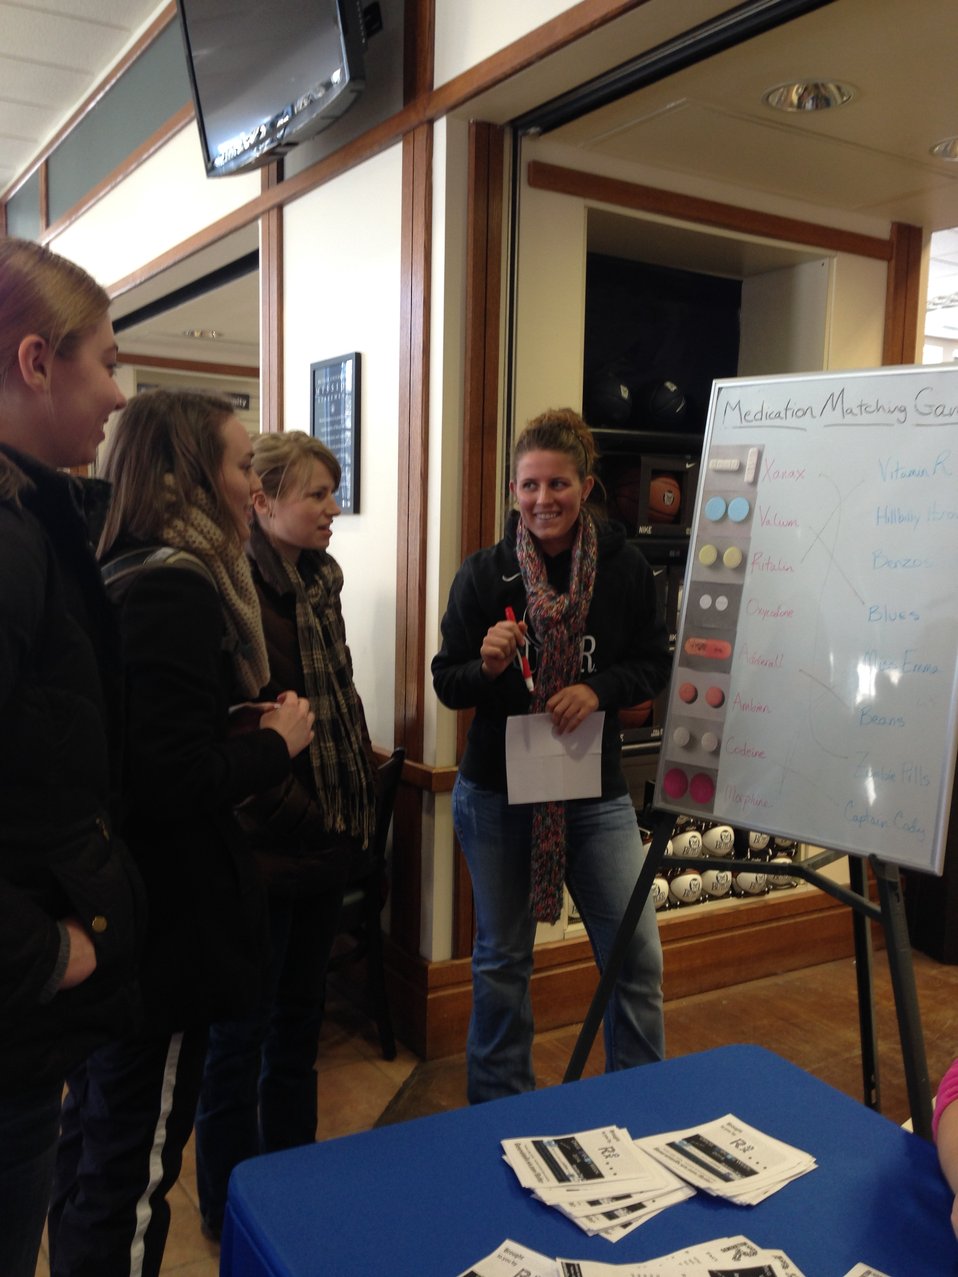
You can Shatter the Myths during NDFW

Students from Butler University Generation Rx hold their 2014 NDFW Event in Indianapolis, IN.